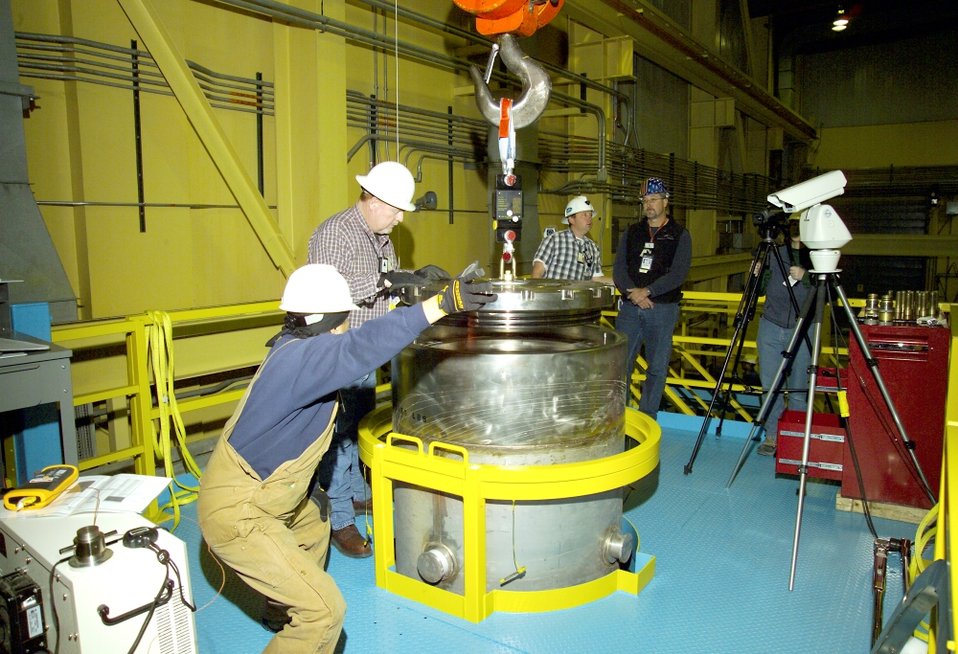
INL Recovery Act work

Workers position a transuranic waste storage canister lid.